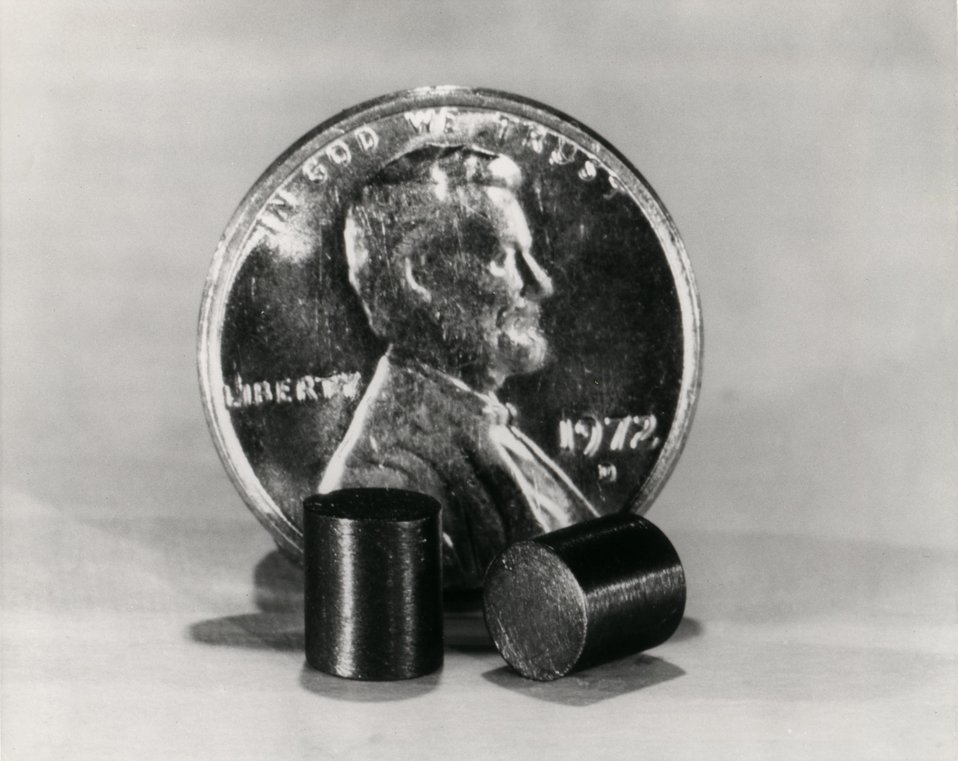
Weighing one-thirtieth of an ounce, this fuel pellet for the Fast Flux Test Facility has the equivalent energy value of 566 pounds of coal. c. 1972.